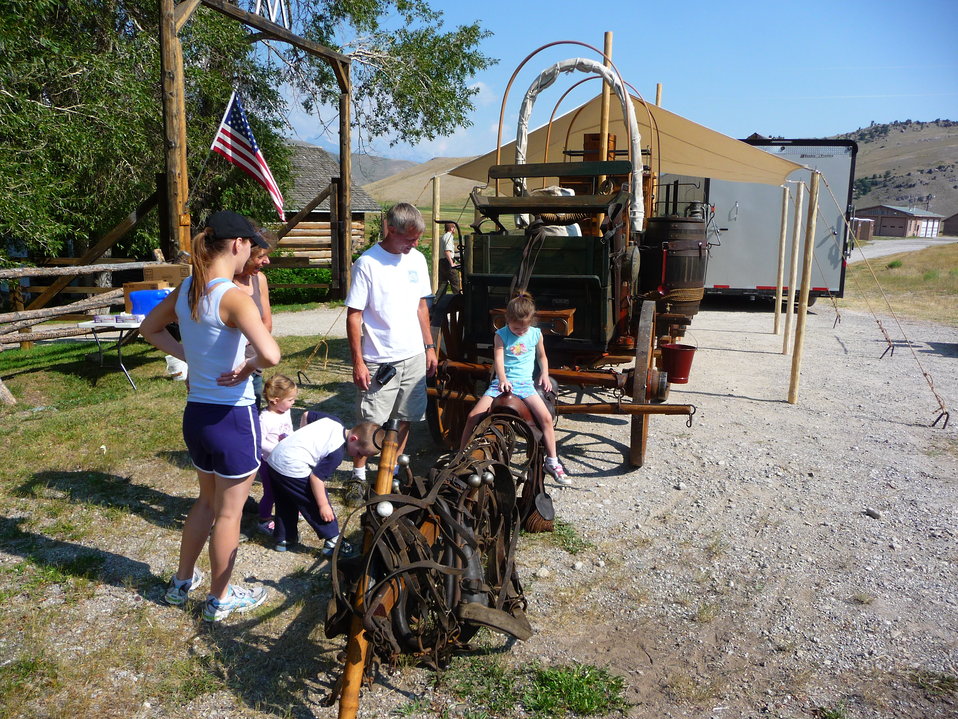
Family Time

Refuge Manager Steve Kallin and his wife Sue investigate the chuckwagon at the Historic Miller House with family members as they enjoy some of the National Elk Refuge centennial weekend events.

Credit: USFWS / Chuck Mulcahy, National Elk Refuge volunteer